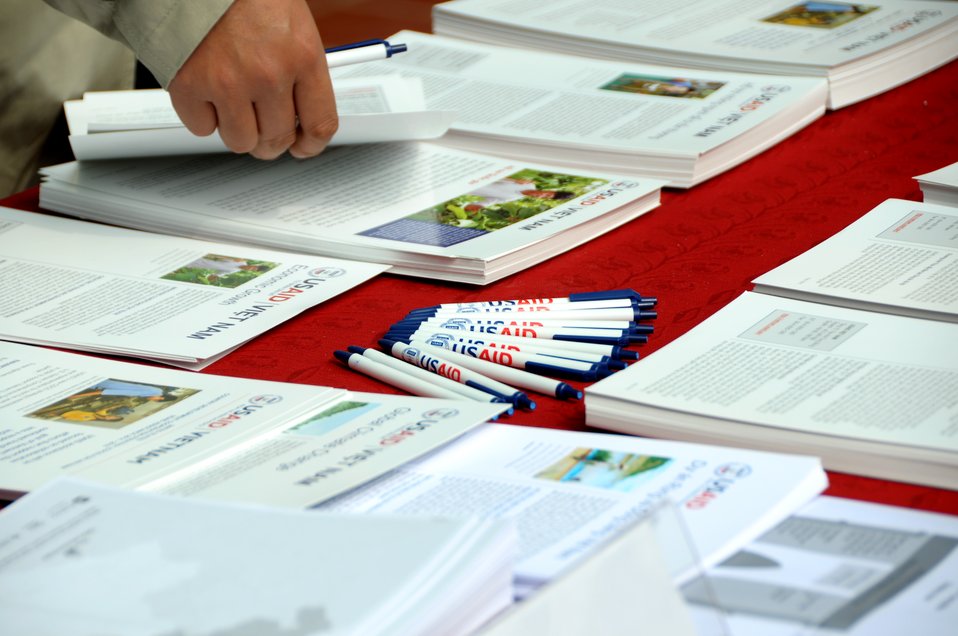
USAID launches the Vietnam Forests and Deltas project in Nam Dinh province.

Quat Lam, Nam Dinh. January 16, 2014.